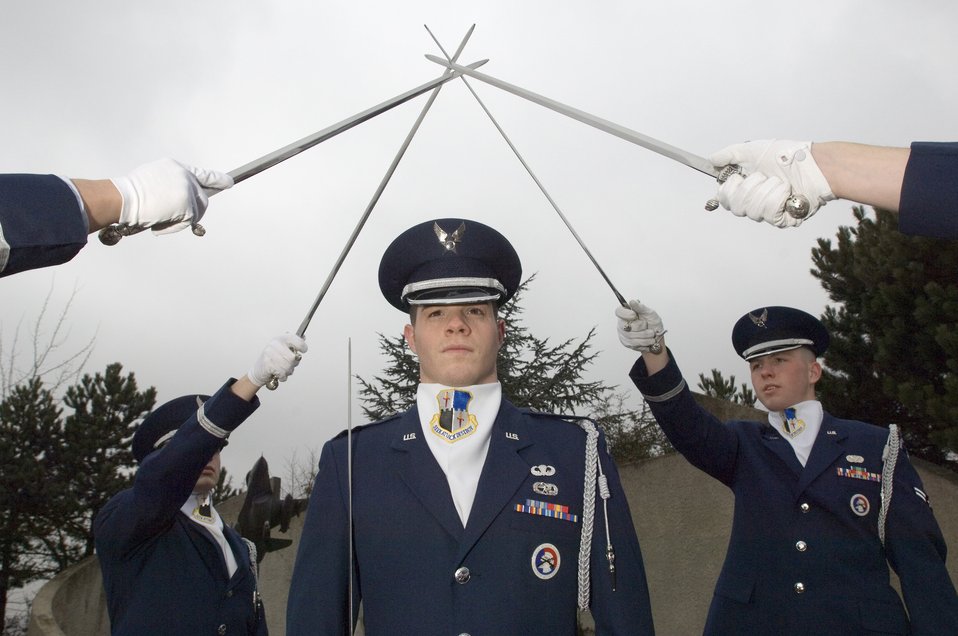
Airmen toss sabers to honor comrades

First Lt. Brian Cooper practices with fellow Eifel Sabre Drill Team members Airmen 1st Class Dallas Smith and Jacob McCarty, left and right, respectively, at Spangdahlem Air Base, Germany, on Tuesday, March 21, 2006. Lieutenant Cooper is a maintenance flight commander for the 52nd Equipment Maintenance Squadron. Airman Smith is a computer networking cryptographic switching system journeyman with the 606th Air Control Squadron. Airman McCarty is a quality assurance evaluator with the 52nd Civil Engineer Squadron.